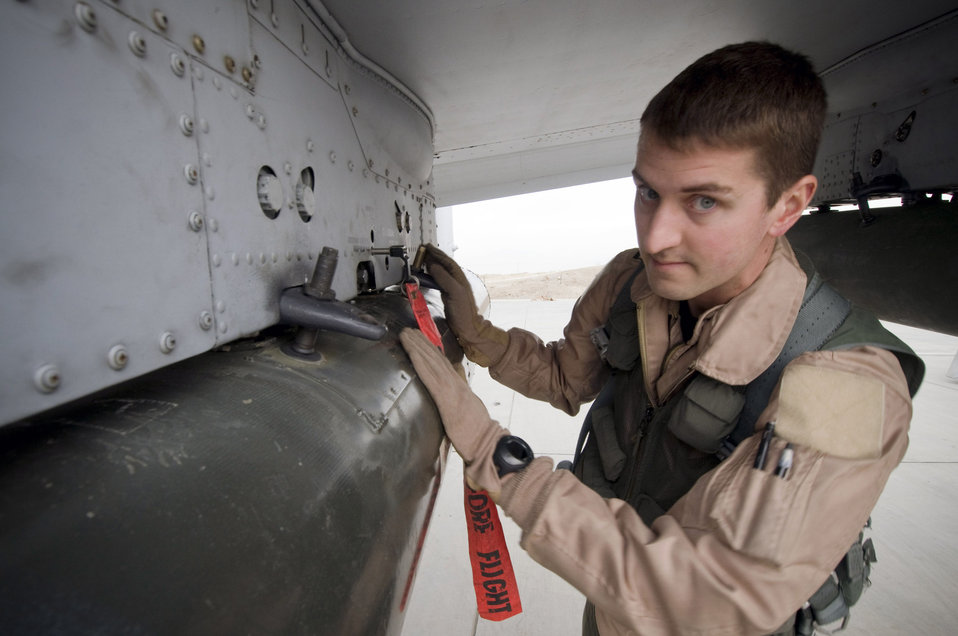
Thunderbolts active during the holidays

Capt. Eric Fleming performs a preflight inspection of a guided bomb unit-12 on an A-10 Thunderbolt II Dec. 2 at Bagram Airfield, Afghanistan. Captain Fleming is the assistant wing weapons and tactics officer and an A-10 pilot. He is deployed from Moody Air Force Base, Ga., and hails from Philadelphia.